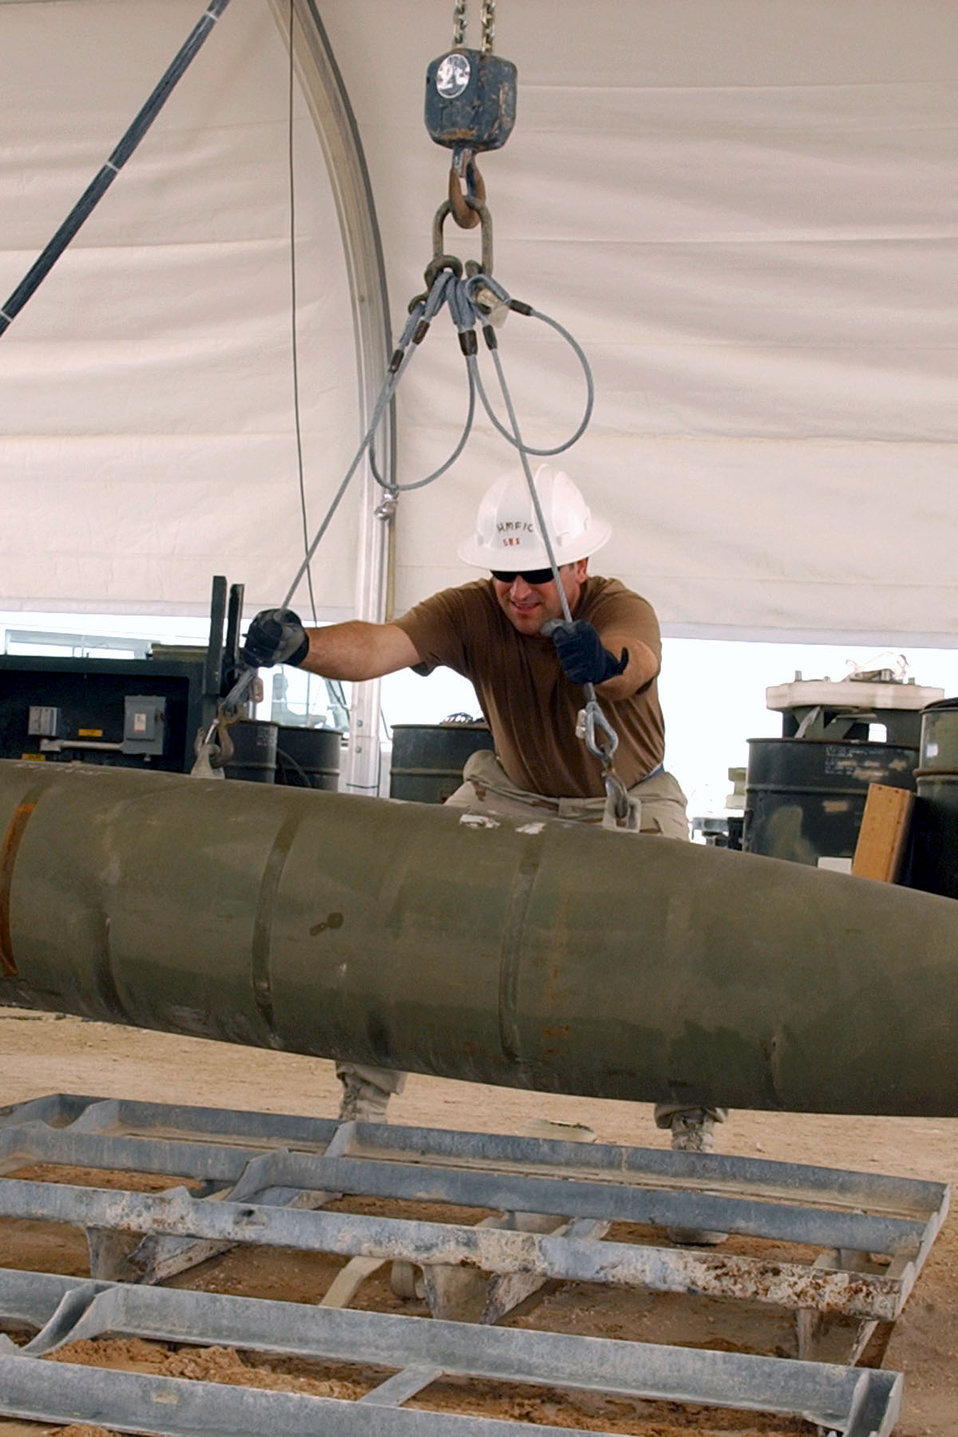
Ammo dump

OPERATION IRAQI FREEDOM -- Tech Sgt. Tony Phinney of the South Carolina Air National Guard moves a weapon April 17 in the